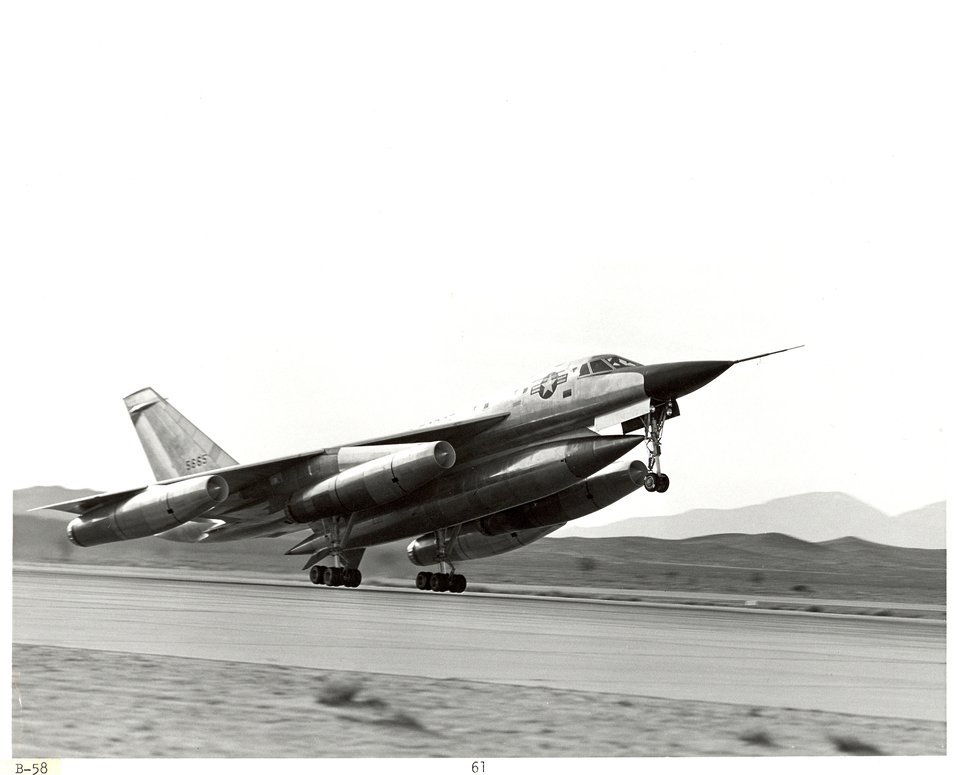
B-58 Hustler, the first Mach 2 bomber

The B-58 Hustler, the world's first Mach 2 bomber, was tested at Edwards Air Force Base, Calif., in the late 1950s and early 1960s,